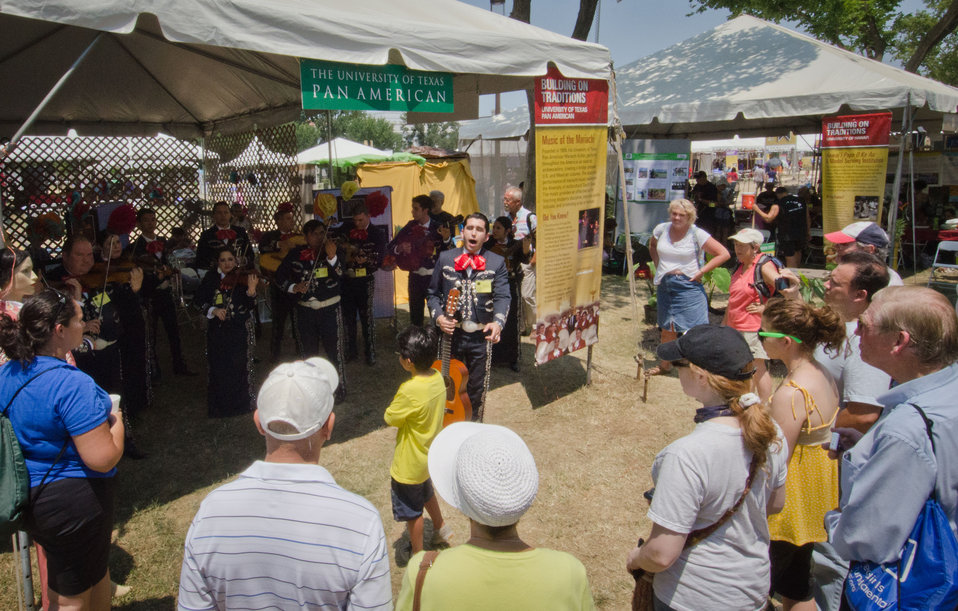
Mariachi Jose Rangel sings during the 2012 Smithsonian Folklife Festival for the University of Texas - Pan American tent, sharing the Mexican Pan American musical traditions, on the National Mall in Washington, D.C., on Wednesday, June 27, 2012 One of the three themes this year is “Campus and Community.” It celebrates the 150 years of the USDA and the Land-Grant University System. The U.S. Department of Agriculture (USDA) and the Land-Grant system extend education across the country, contributing to American agriculture success and rural prosperity. “Campus and Community” has demonstrations, discussions, hands-on activities, and entertainment to that showcase the many ways that this partnership works to improve American agriculture and rural life.